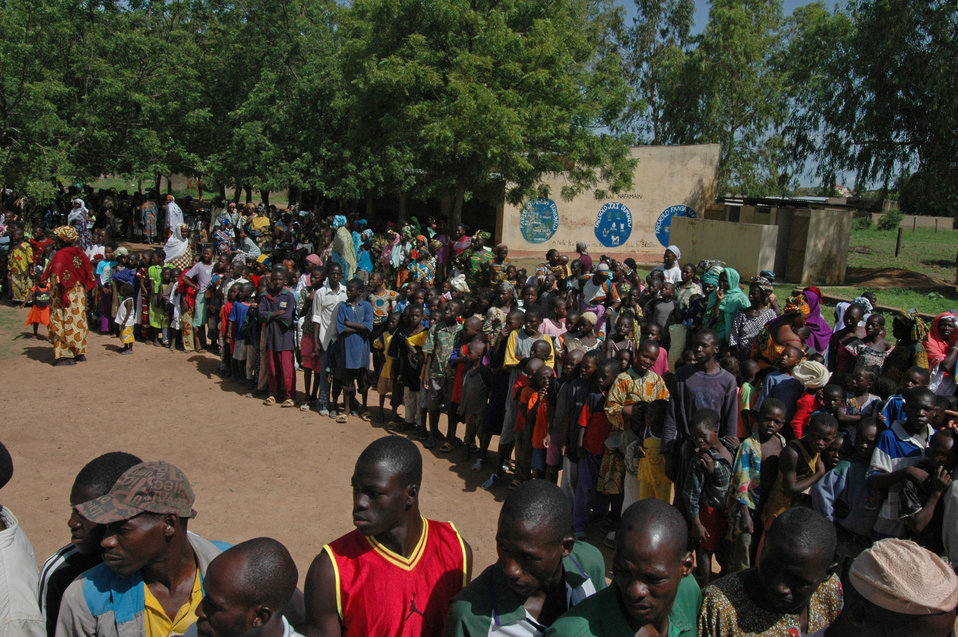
Servicemembers treat 8,100 patients, livestock in Mali

Hundreds of Malians line up to be seen by American servicemembers July 24 in a village outside of Bamako, Mali. Throughout the medical training exercise, the American medical team visited four villages, trained more than 160 doctors, medics and nurses, saw more than 4,000 patients, extracted about 600 teeth, treated 4,100 goats and sheep, and conducted a mass casualty exercise in Mali.